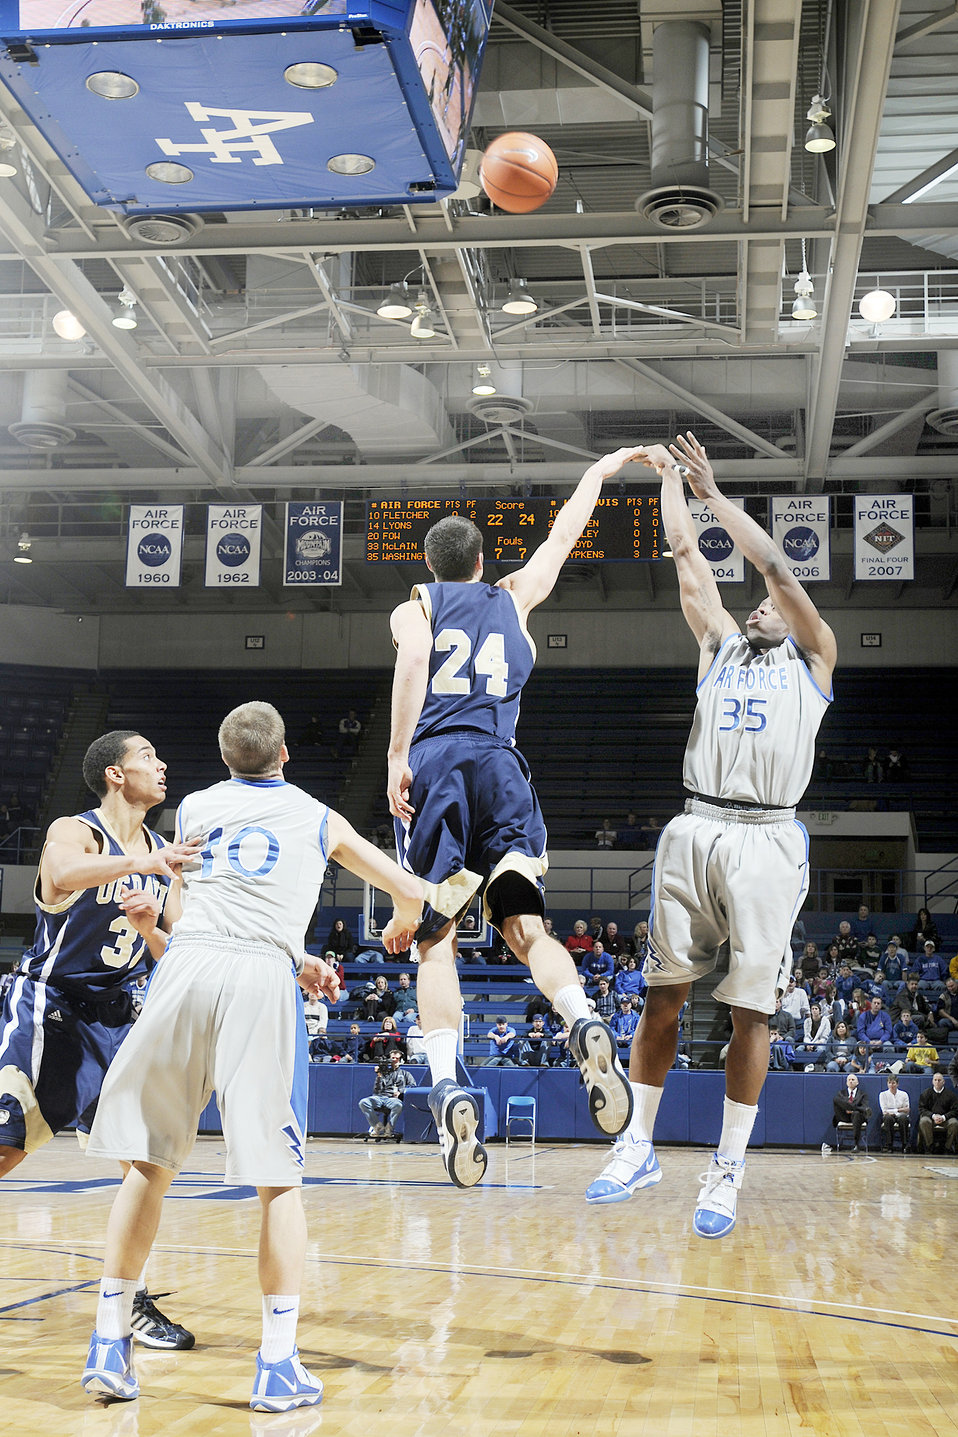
Falcons Defeat UC Davis Aggies

At the U.S. Air Force Academy, Colo., junior guard Evan Washington shoots for 2 of his 10 points as the Falcons rally to defeat University of California-Davis 69-57 Dec. 22, 2009. Through ten games this season, Washington is averaging 12 points per contest.